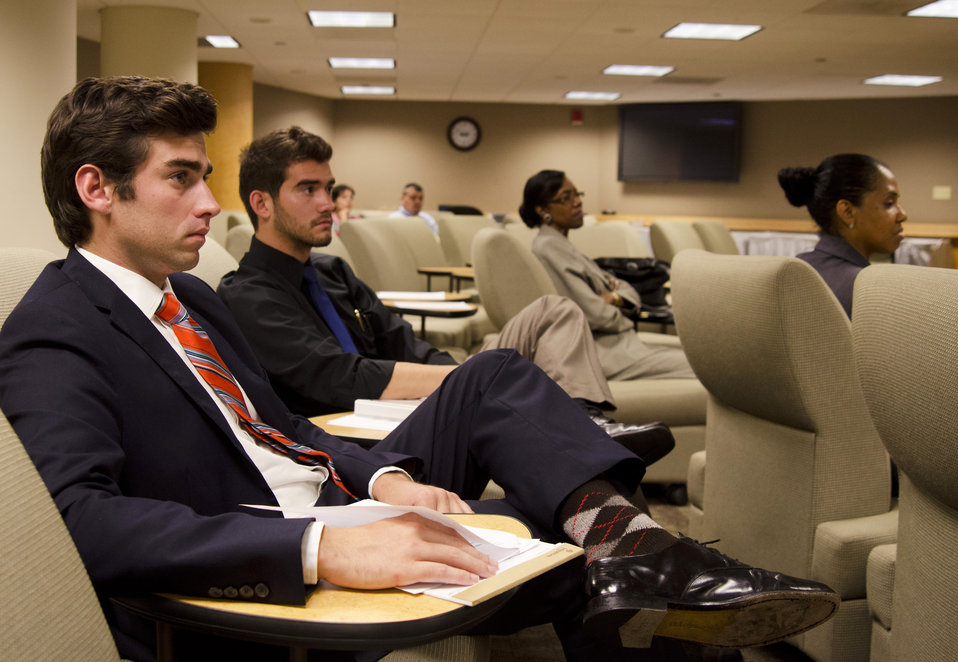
U.S. Department of Agriculture (USDA) Foreign Agricultural Service (FAS) intern Tyler Anderson (left) and USDA Food Nutrition Service (FNS) intern Marco Castanos listen to presentations at the USDA Internship Program Listening Session held in USDA’s South Building in Washington, D.C. on Monday, August 7, 2012. The purpose of the USDA Internship Program Listening Session is to provide interns with a forum to express their views about their experiences as a USDA intern. These young people will be among the most promising future USDA leaders and participate in an individual discussion and group session that will develop leadership skills.